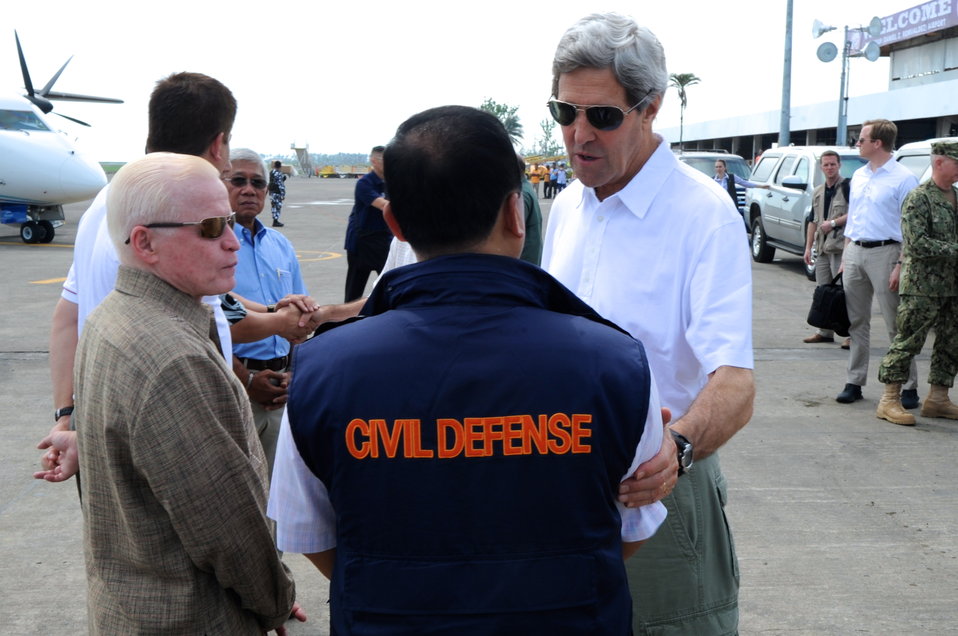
Secretary Kerry Speaks With Filipino Officials About Typhoon Haiyan Damage

U.S. Secretary of State John Kerry chats with Philippine Ambassador to the United States Jose Cuisia and Undersecretary Eduardo del Rosario about Typhoon Haiyan upon arriving in Tacloban City, Philippines, on December 18, 2013, to inspect remaining damage and announce $25 million in fresh U.S. recovery aid.